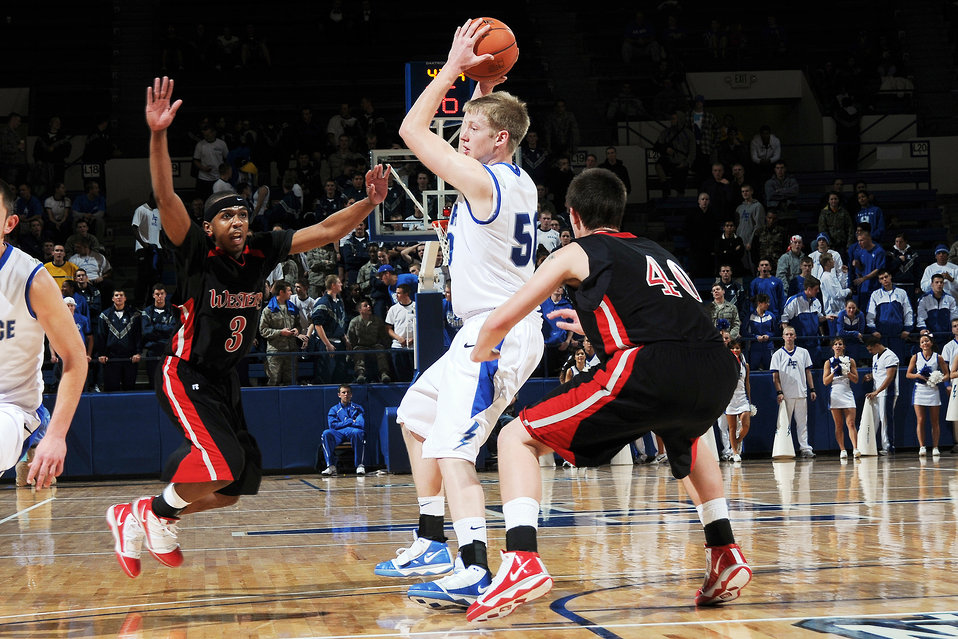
Falcons reign supreme in season opener

U.S. Air Force Academy senior forward Grant Parker looks for the open man as Western State defenders Weylan Towns and Tyler Miller attempt to regain control of the ball in the season opener Nov. 13, 2009, in Clune Arena at the U.S. Air Force Academy, Colo. Parker had a career high 26 points as the Falcons beat the Mountaineers 65-54.